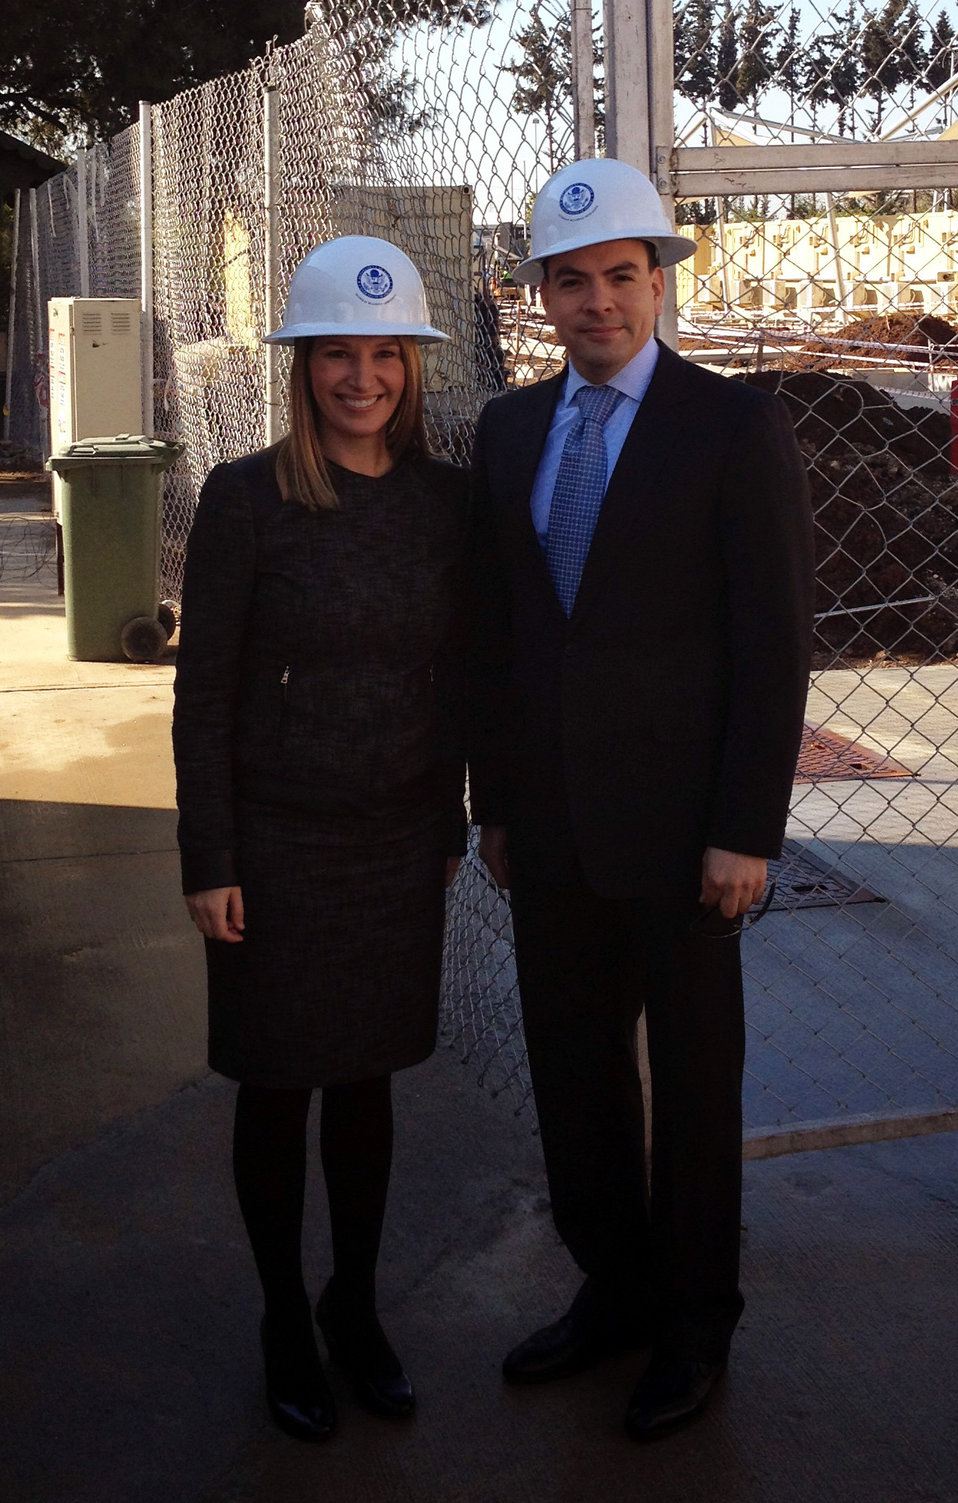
Deputy Secretary Higginbottom and Principal Officer Espinoza Tour New Construction at Consulate Adana

Deputy Secretary of State for Management and Resources Heather Higginbottom and John Espinoza, a Principal Officer, tour new construction at the U.S. Consulate in Adana, Turkey, on March 21, 2014.